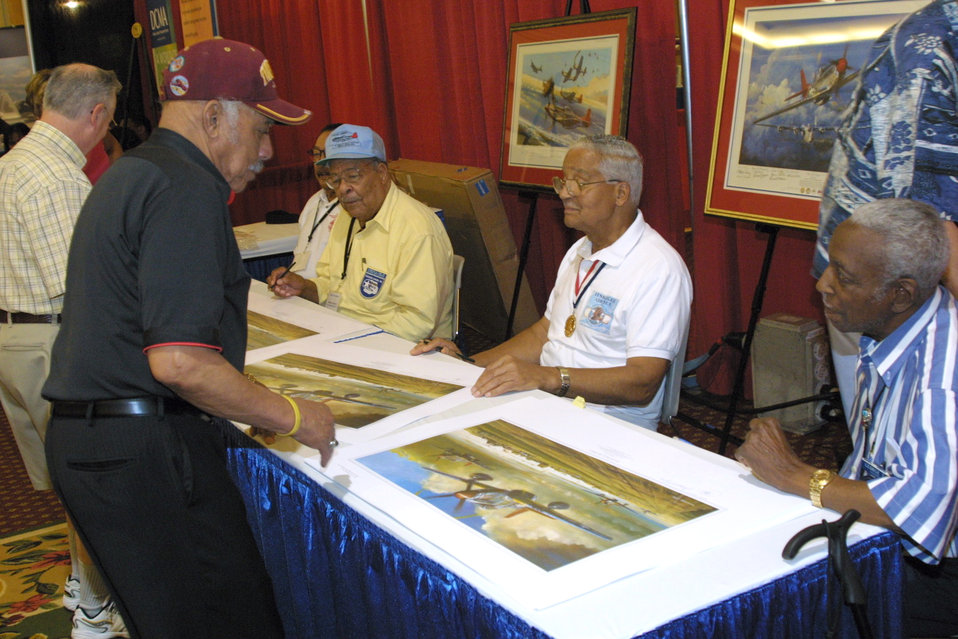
Tuskegee Airman dies

Five Tuskegee Airmen prepare to autograph lithographs Aug. 6, 2008, illustrating various missions the men flew during World War II. Retired Lt. Col. Bill Holloman went on to become the Air Force's first African-American helicopter pilot. Colonel Holloman died June 11, 2010, in Kent, Wash.